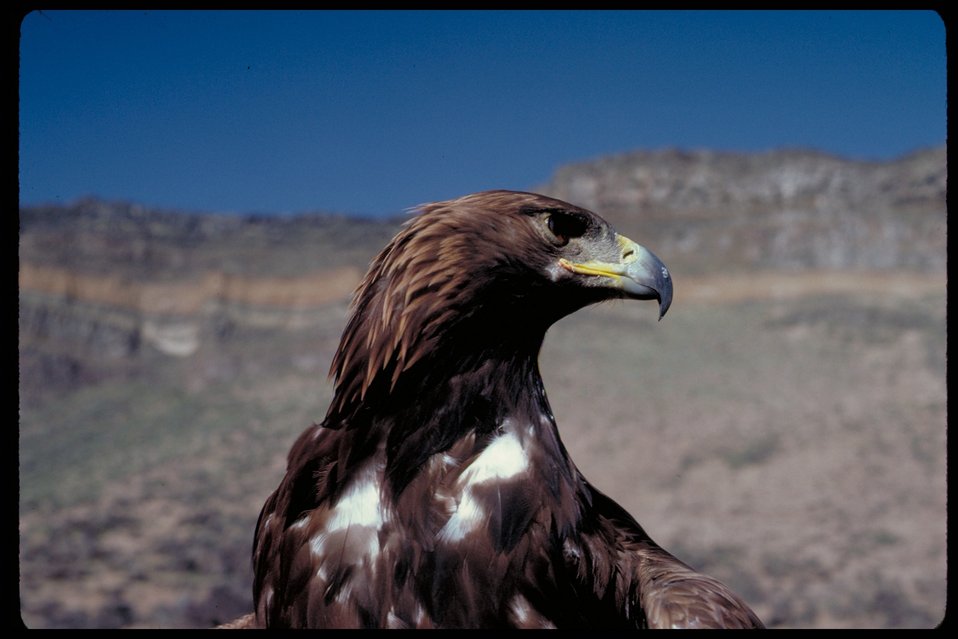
Birds of Prey National Conservation Area BOP Owyhee Field Office LSRD Lower Snake River District